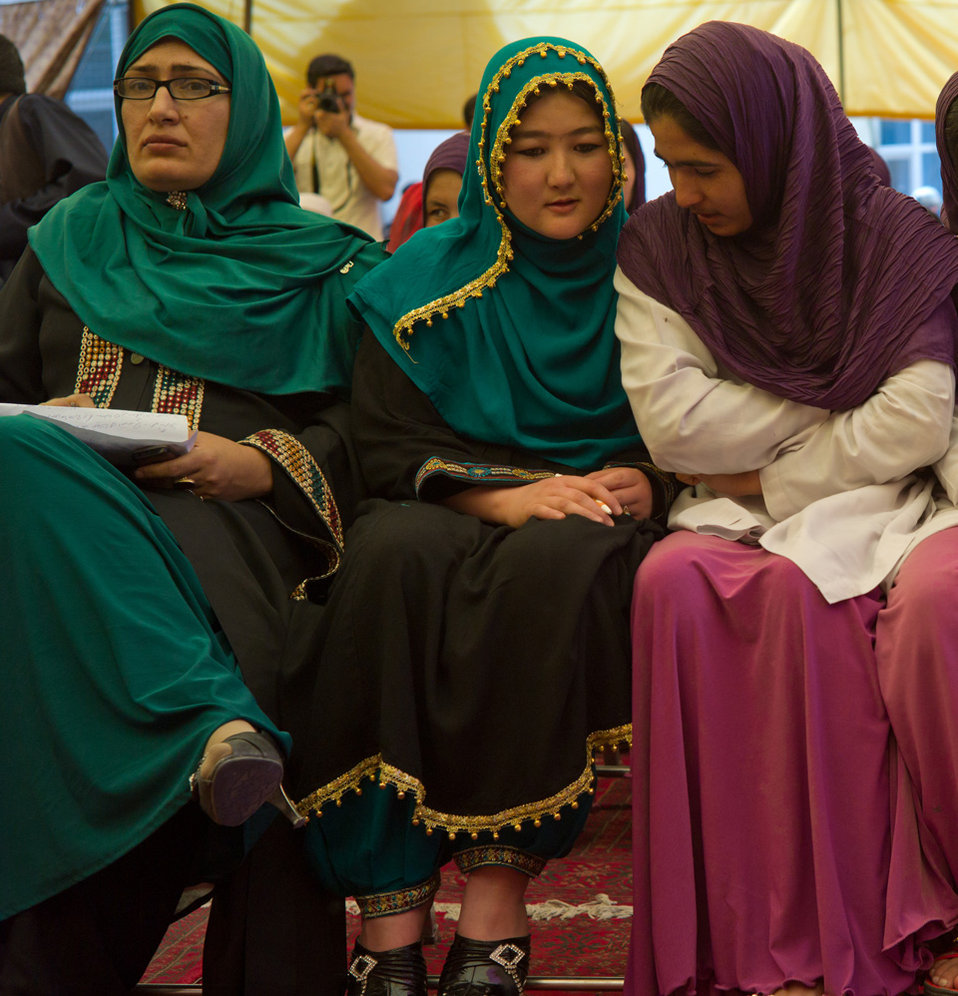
Three mid-wife graduates